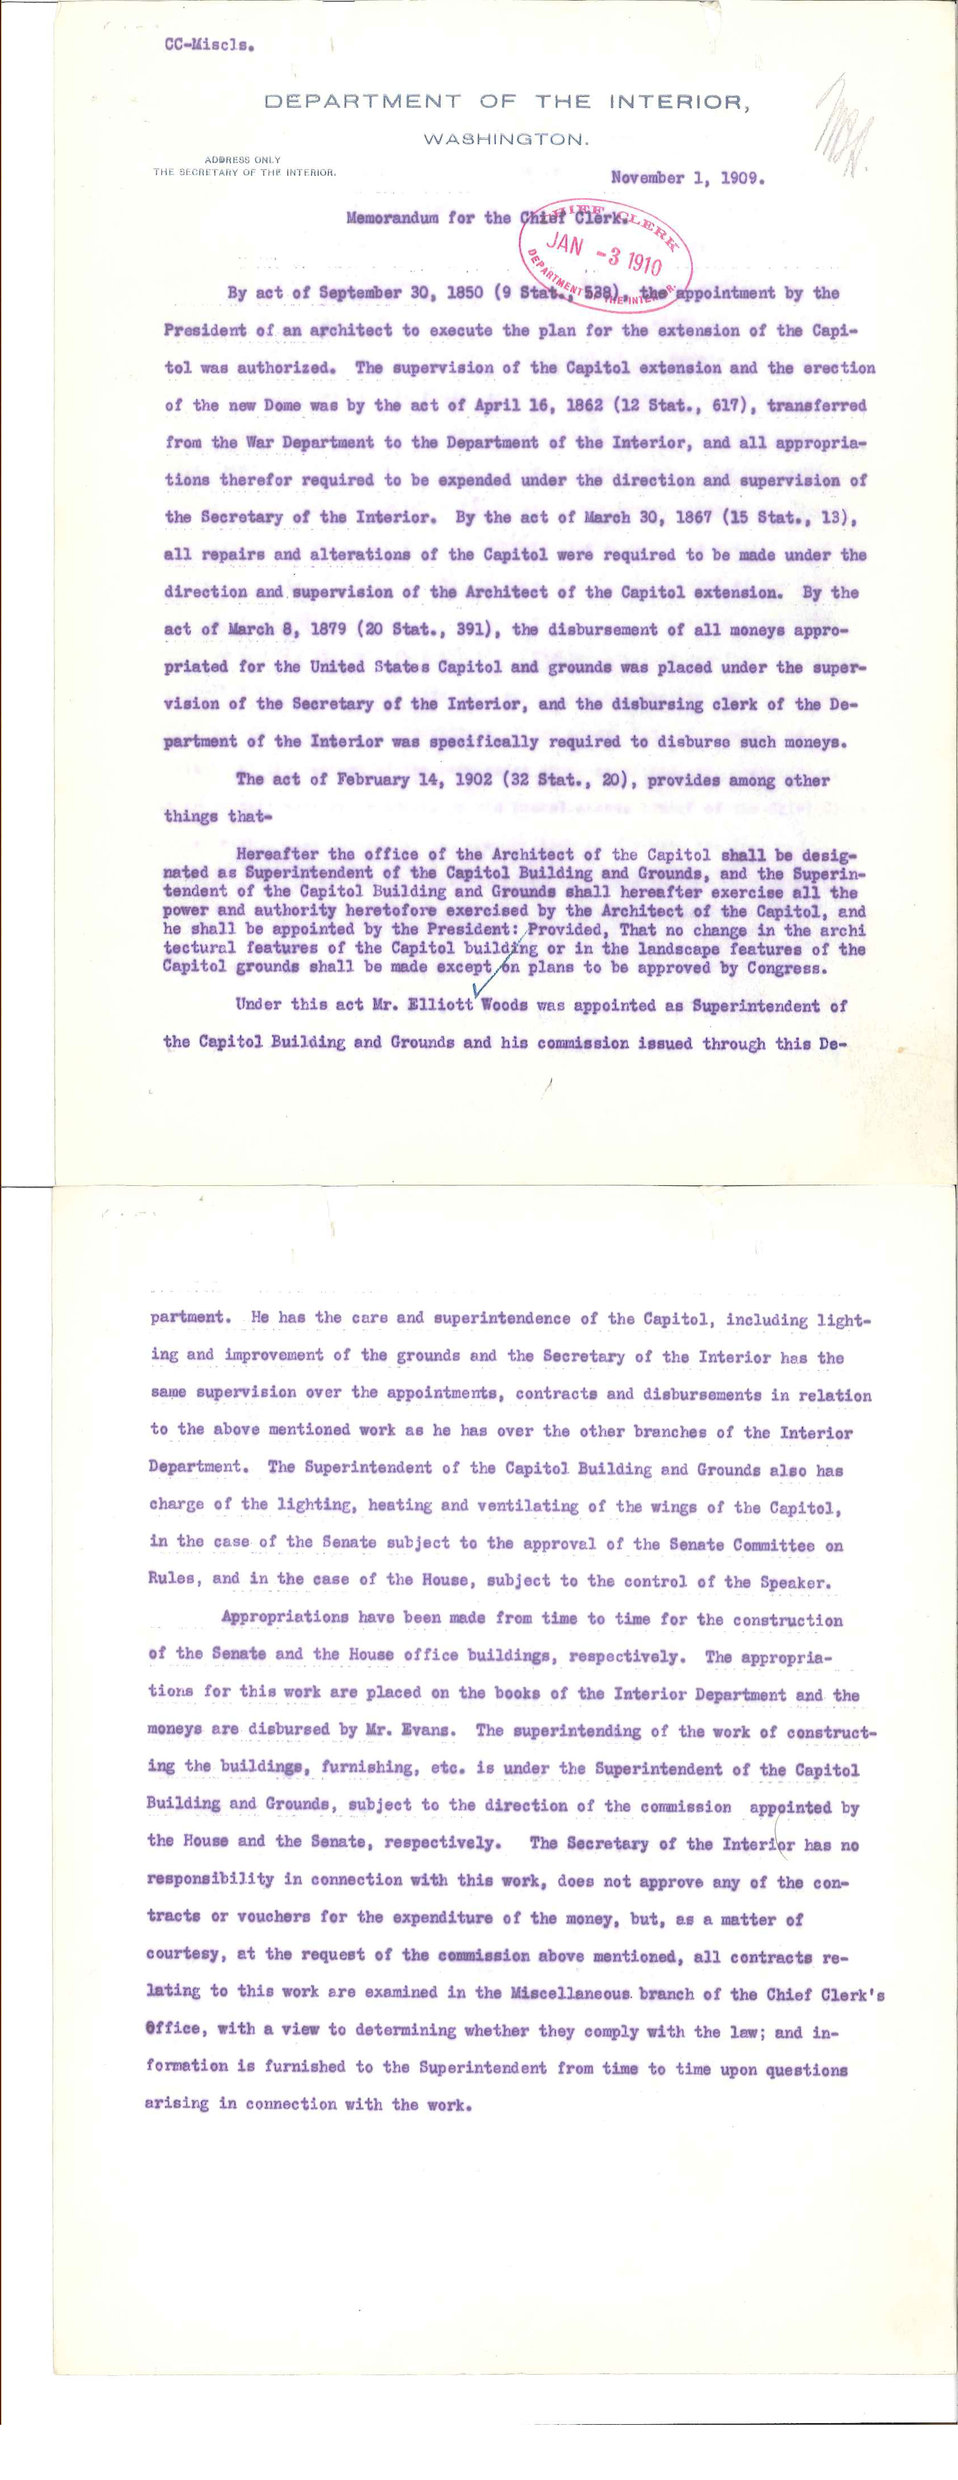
1909 Letter from Department of the Interior

This letter from the Department of the Interior chronicles the history of the creation of the Office of the Architect of the Capitol.